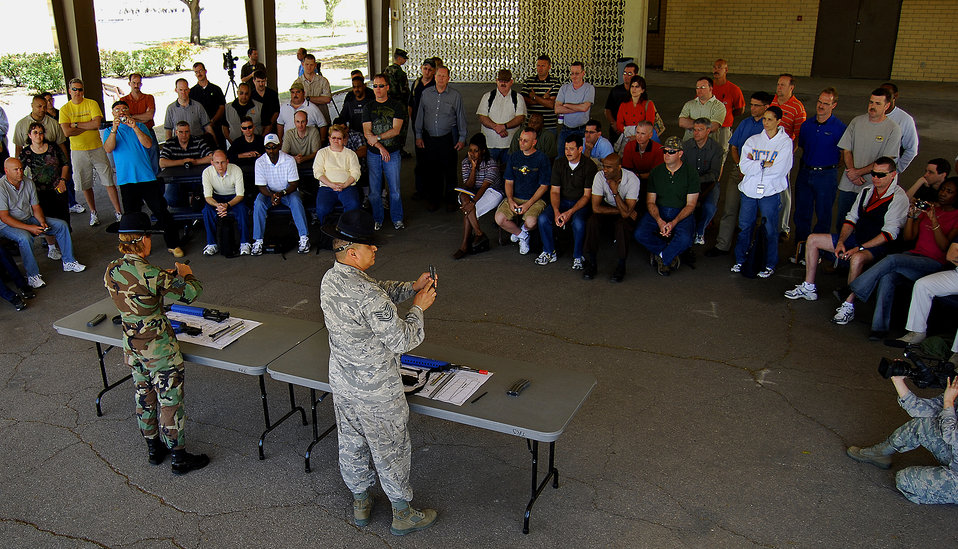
Retired airmen called back to duty

Retired Air Force majors and master sergeants take part in the 2009 Push-Pull exercise at Lackland Air Force Base, Texas. The exercise tested the ability of Air Force officials to recall retired Airmen with specific skills should their expertise be needed in the future.